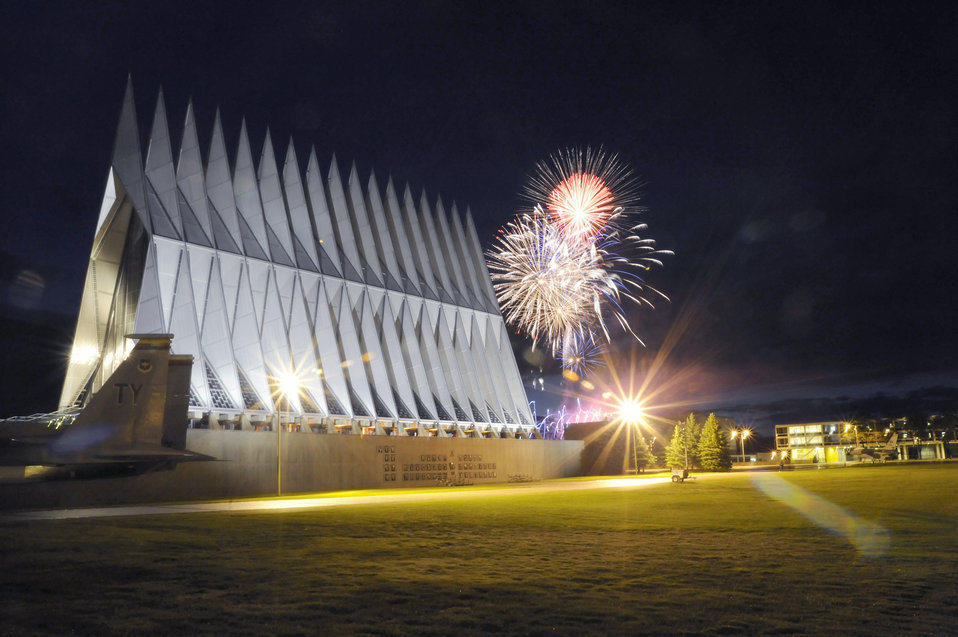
Fireworks light up the night...

Fireworks explode over the Air Force Academy Cadet Chapel during the Independence Day fireworks show at the Air Force Academy July 4, 2009.